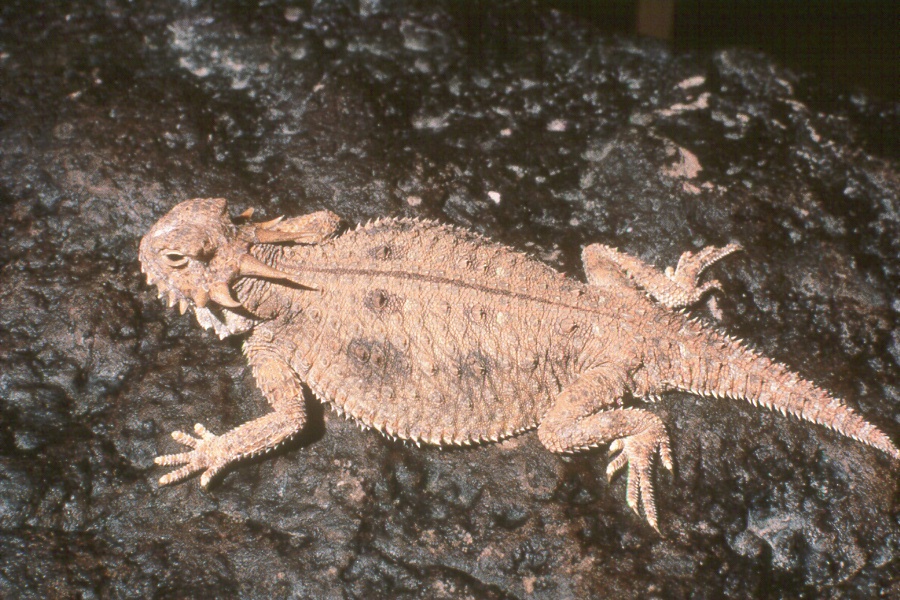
Flat-Tailed Horned Lizard